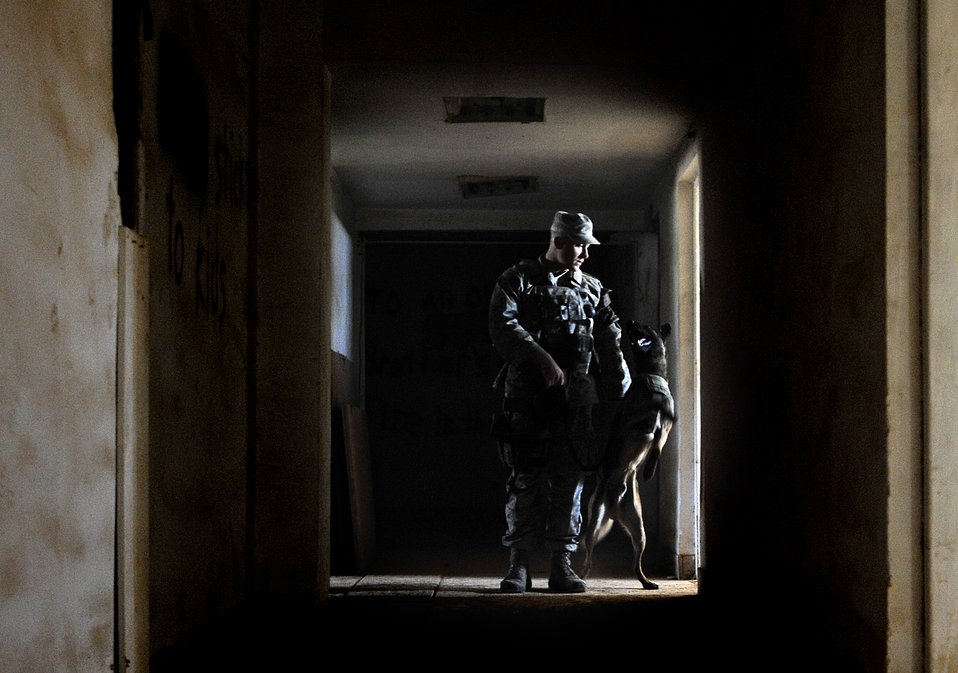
An Airman's Best Wingman

Senior Airman Stephen Hanks, 447th Expeditionary Security Forces Squadron military working dog handler, and Geri, 447th ESFS patrol and explosive detector dog, secure an abandoned building on a routine patrol by checking the location for explosives or squatters on Sather Air Base in Baghdad, Iraq, Dec. 11, 2011. For the last six months Geri and Hanks, have been supporting Operation New Dawn by providing explosive and psychological deterrence. Hanks and Geri are deployed from Patrick Air Force Base, Fla. Hanks is from Amherst, Mass.